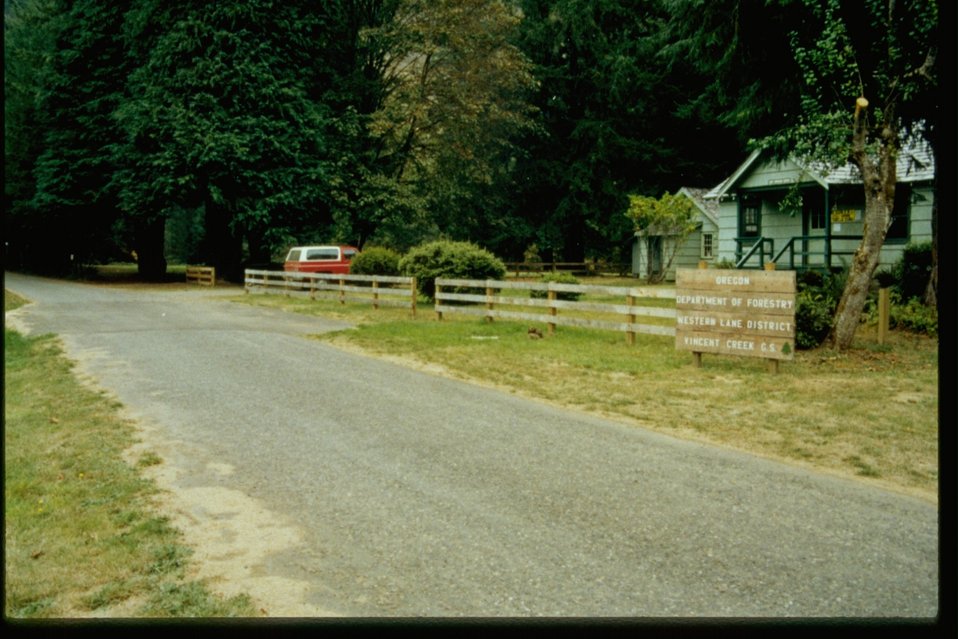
Vincent Creek Recreation Site. (Department of Forestry)